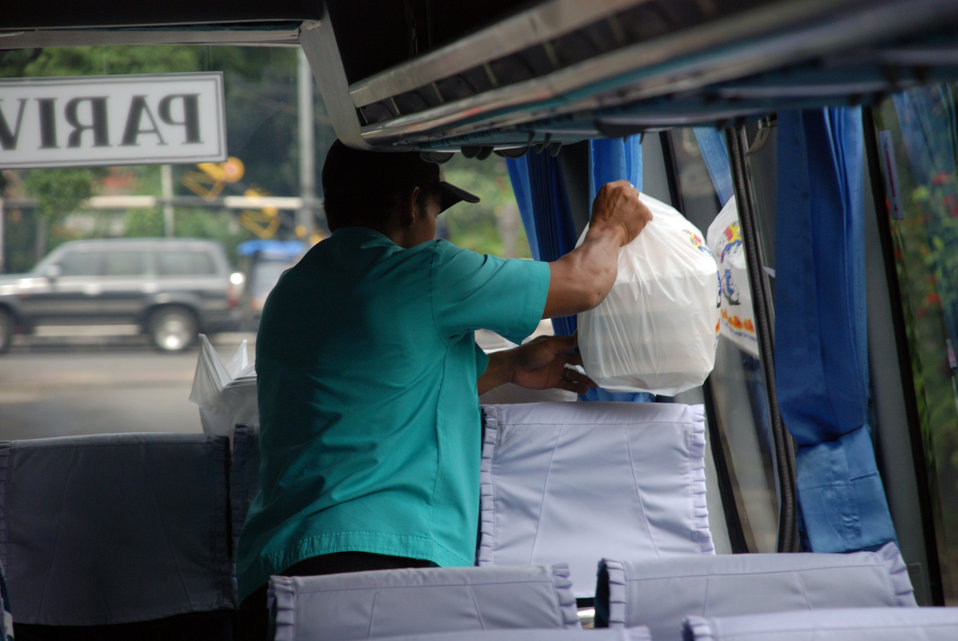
Behind the Scenes: Indonesian Students Prepare for Secretary Clinton's Arrival

Loading the lunch onto the bus before leaving for Halim Airport in Jarkarta, Indonesia during the visit of U.S. Secretary of State Hillary Rodham Clinton February 18, 2009.